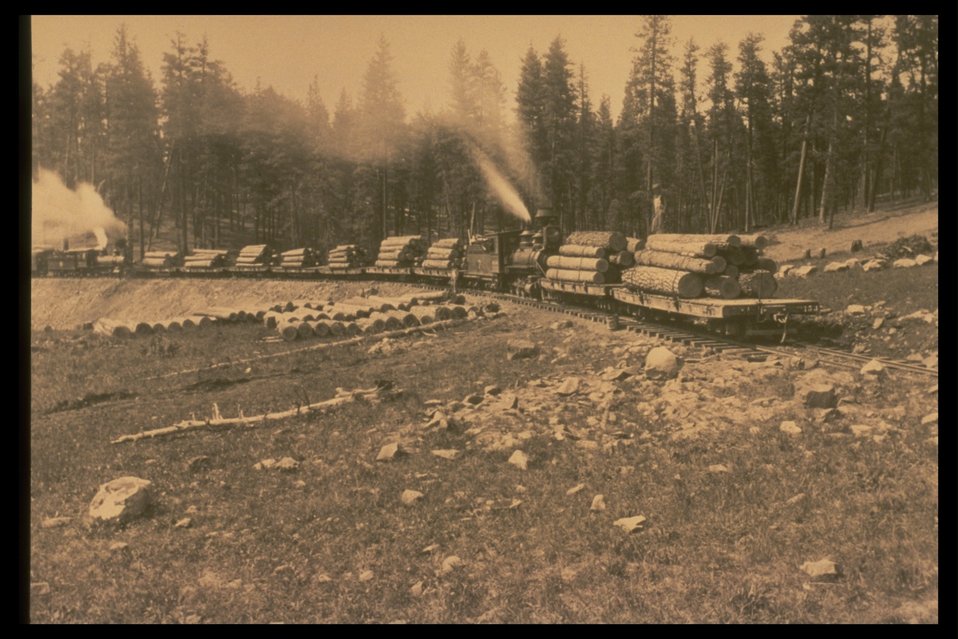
Black and white photo of a logging train with two engines.